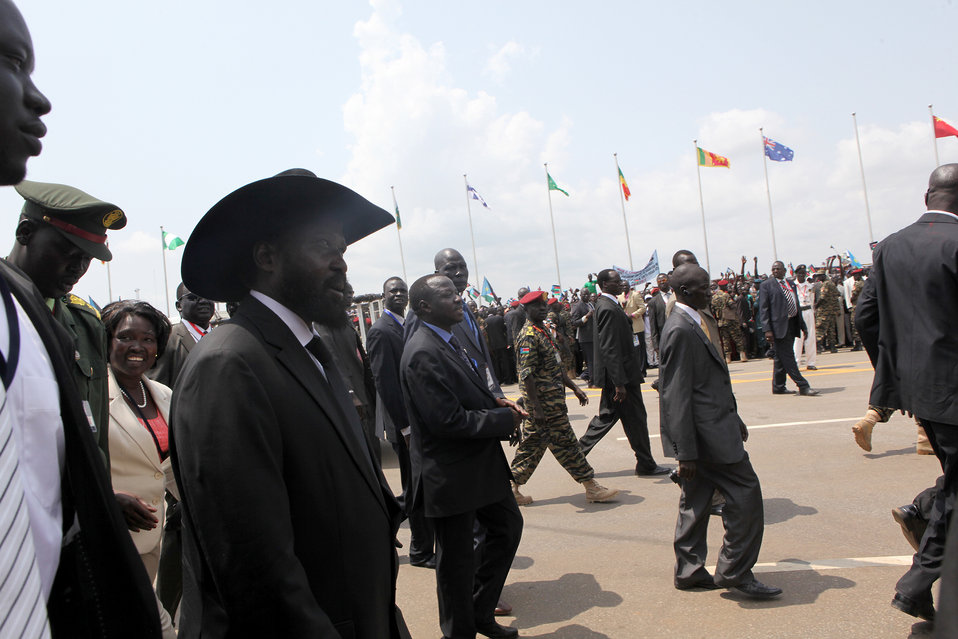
South Sudan Independence Day

H.E. Salva Kiir Mayardit, President of the Republic of South Sudan, greets guests at the Independence Day celebrations in Juba, South Sudan on July 9, 2011.